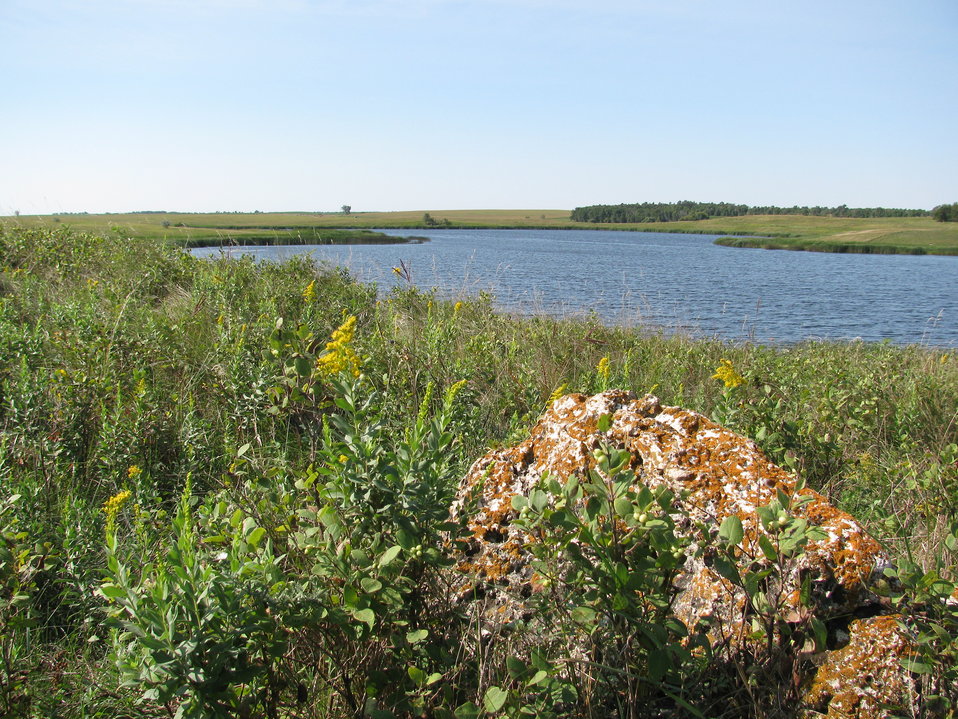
Kannowski Rock

This photo was taken at the Kannowski WPA. Glacially-deposited rocks like this are common to the Kulm WMD.